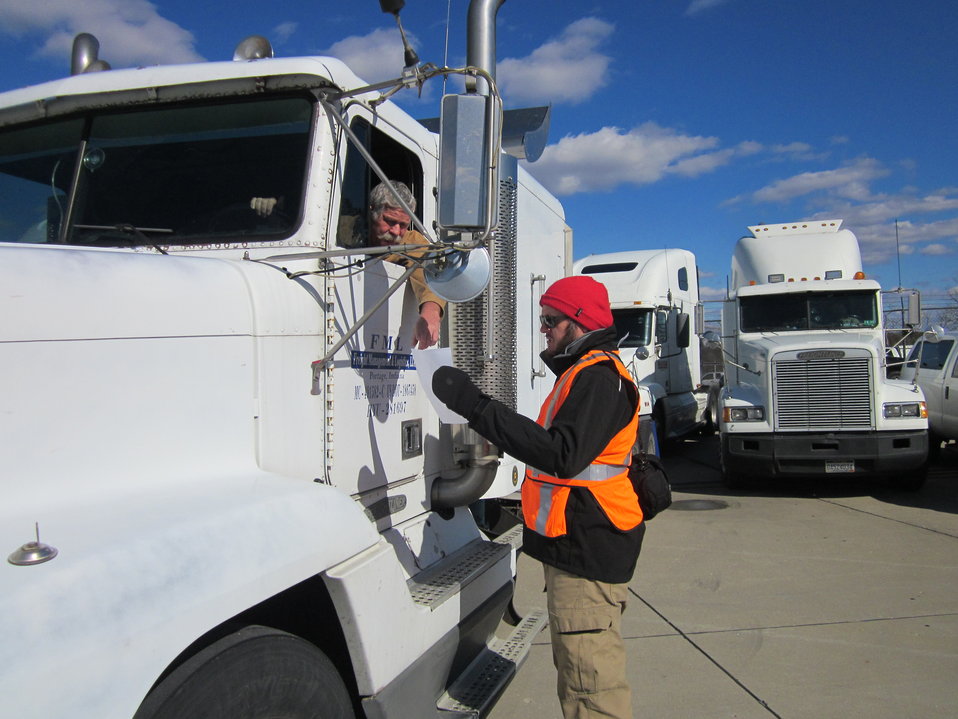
Checking in (WV)

Charleston, WV, Nov. 2, 2012: Josh O'Connor, Division Supervisor of the Southern Area Red Type 1 Incident Management Team checks in a truck at a FEMA Logistical Staging Area at Yeager Airport where food, water, generators and other supplies were collected and distributed by the National Guard for storm victims. About 700 pallets of water and 300 pallets of food were distributed. O'Connor is a fire management specialist at the Atlanta, Georgia Regional Office of the U.S. Fish and Wildlife.